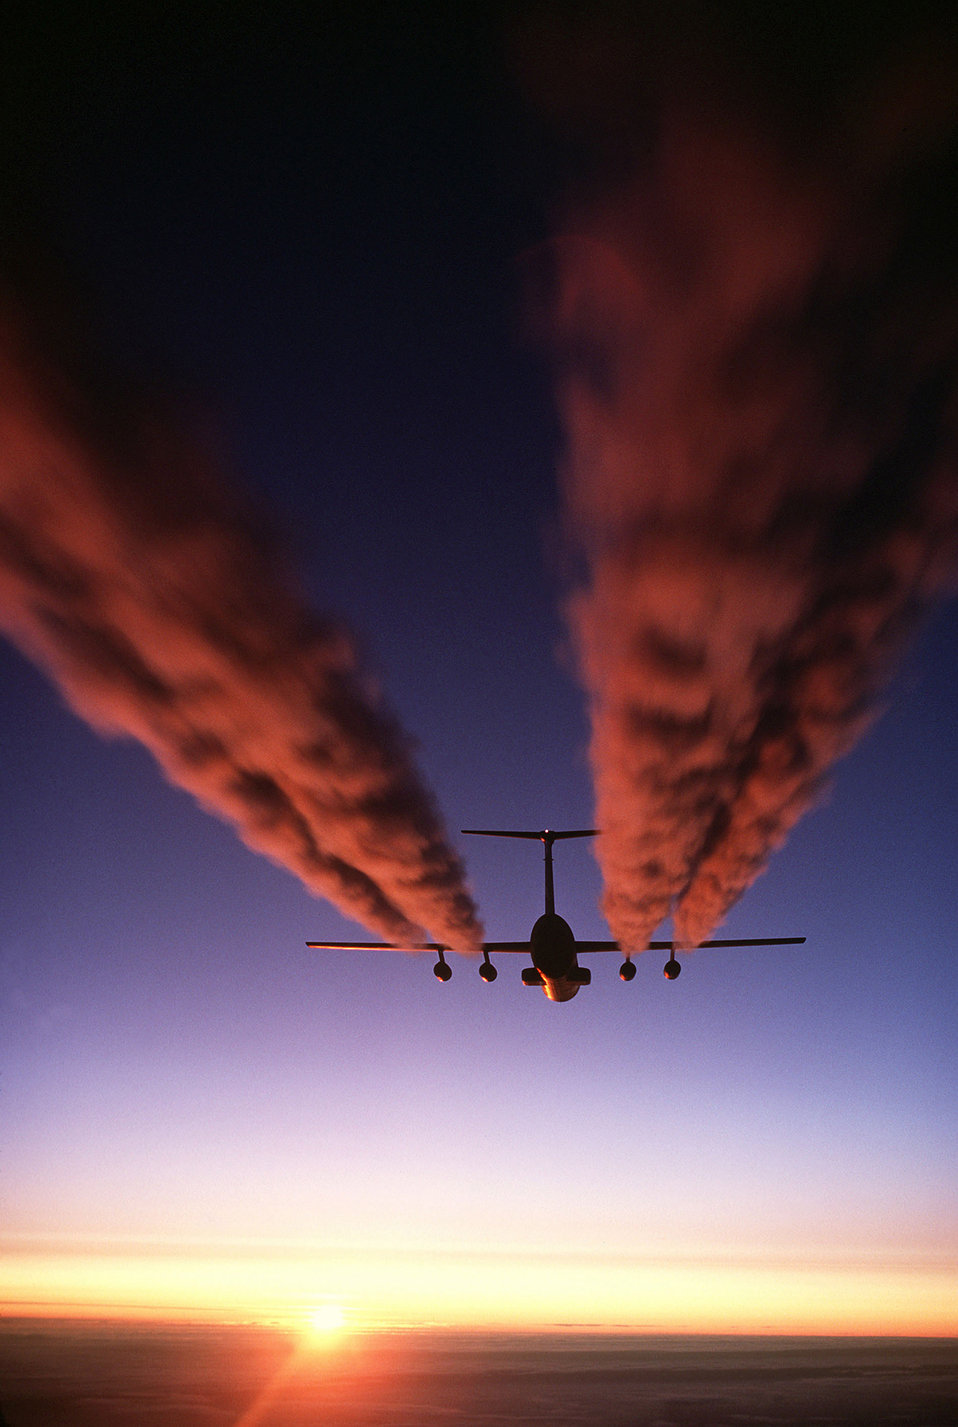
DEEP FREEZE

A C-141B Starlifter aircraft leaves four plumes of exhaust behind it as it prepares for an airdrop during Operation Deep Freeze. Can airlift combat forces, equipment and supplies, and deliver them on the ground or by airdrop, using paratroop doors on each side and a rear loading ramp. It can be used for low-altitude delivery of paratroops and equipment, and high-altitude delivery of paratroops. It can also airdrop equipment and supplies using the container delivery system. It is the first aircraft designed to be compatible with the 463L Material Handling System, which permits off-loading 68,000 pounds of cargo, refueling and reloading a full load, all in less than an hour. The C-141 has an all-weather landing system, pressurized cabin and crew station. Its cargo compartment can easily be modified to perform around 30 different missions. About 200 troops or 155 fully equipped paratroops can sit in canvas side-facing seats, or 166 troops in rear-facing airline seats. Rollers in the aircraft floor allow quick and easy cargo pallet loading. A palletized lavatory and galley can be installed quickly to accommodate passengers, and when palletized cargo is not being carried, the rollers can be turned over to leave a smooth, flat surface for loading vehicles. In its aeromedical evacuation role, the Starlifter can carry about 103 litter patients, 113 ambulatory patients or a combination of the two. It provides rapid transfer of the sick and wounded from remote areas overseas to hospitals in the United States.